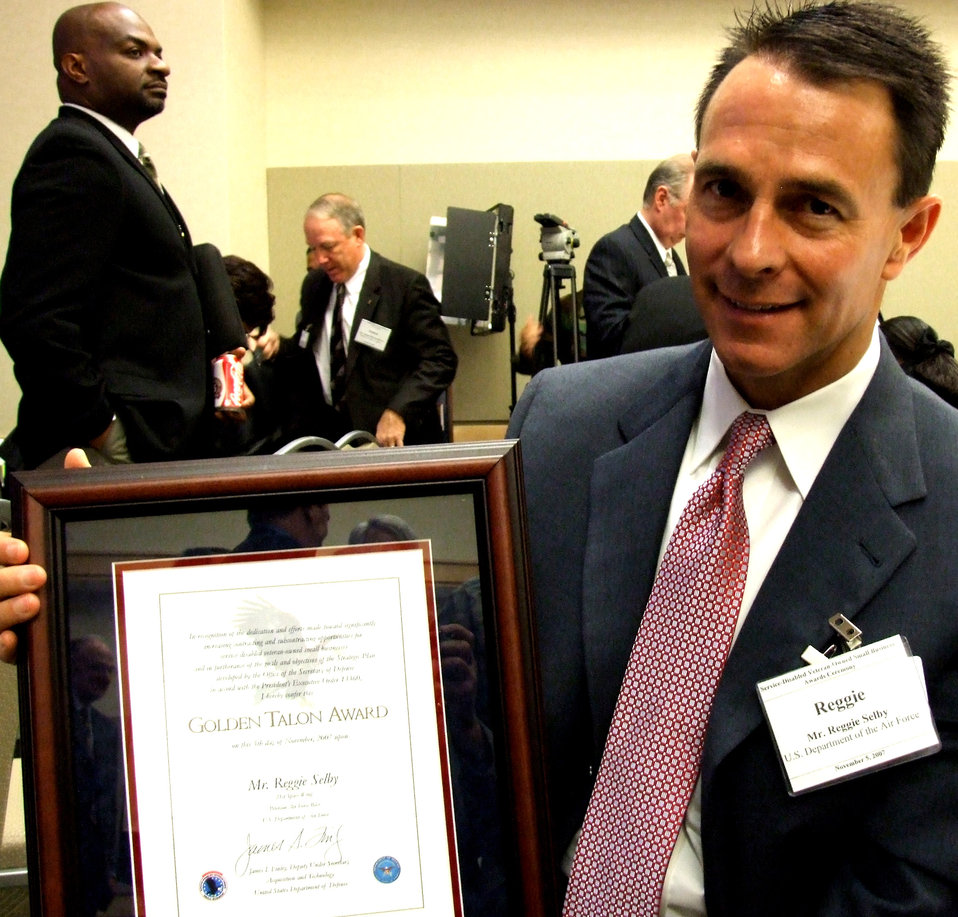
Support of disabled veteran-led businesses

Talon Award recipient Reggie E. Selby is a small business specialist at Peterson Air Force Base, Colo. Enlisting small companies owned by service-disabled veterans to work with the Defense Department is good business and the right thing to do, Selby said at the first Service-Disabled Veteran Owned Small Business Awards ceremony held at the Pentagon on Nov. 5.